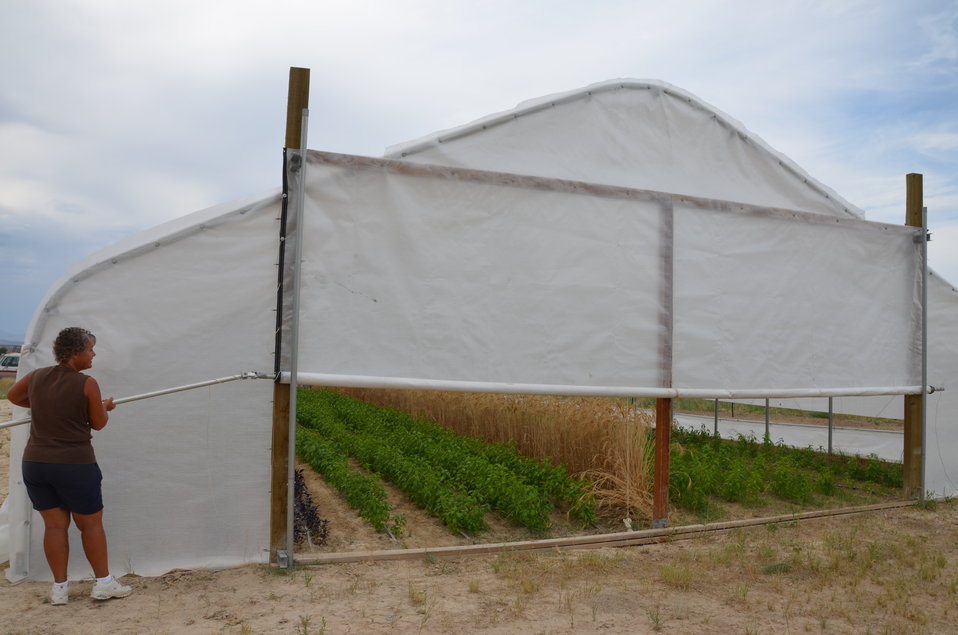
Carol Huether adjusts the high tunnel’s sides depending on weather conditions on her farm in Elko, NV.